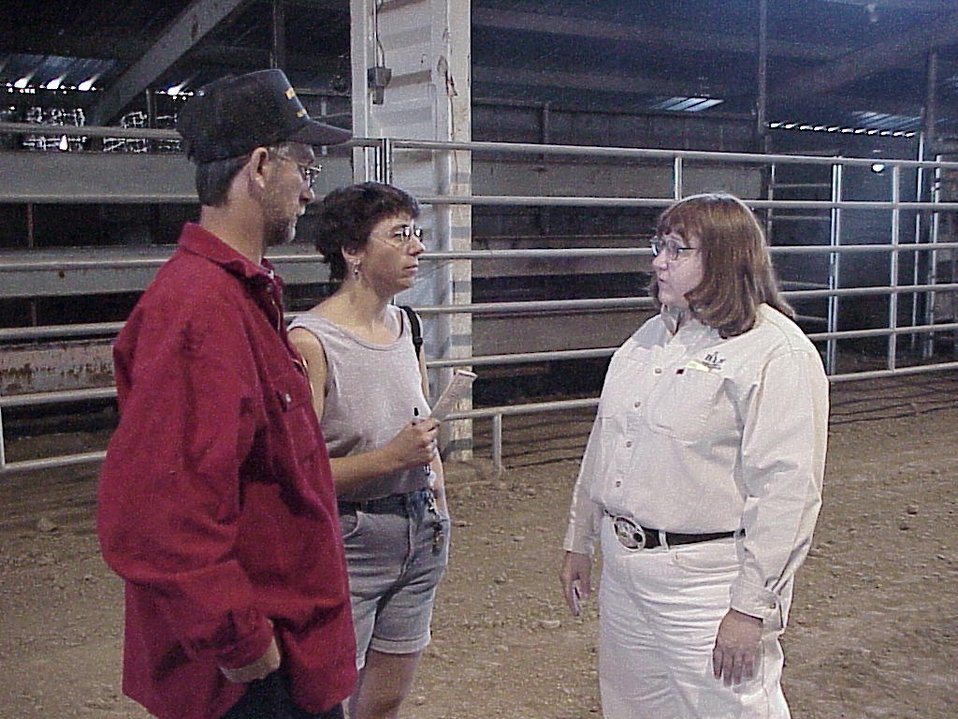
Lewiston Wild Horse and Burro Adoption Program Auction WHB indoor auction Cottonwood Field Office UCSC Upper Columbia Salmon Clearwater District